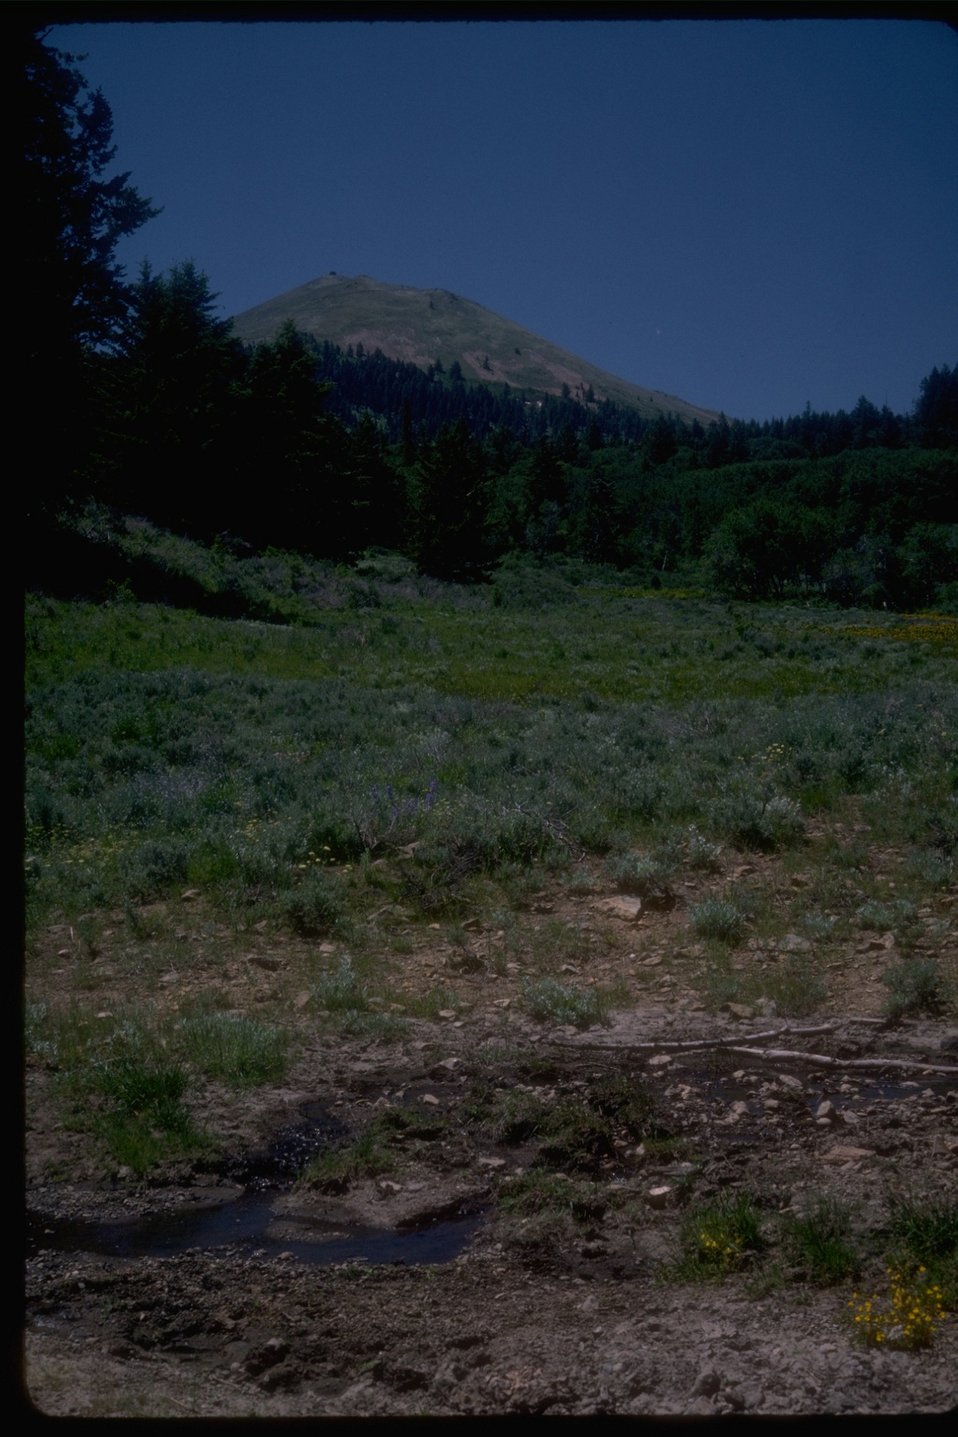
A picture of Lookout Mountain taken from the Northern side.